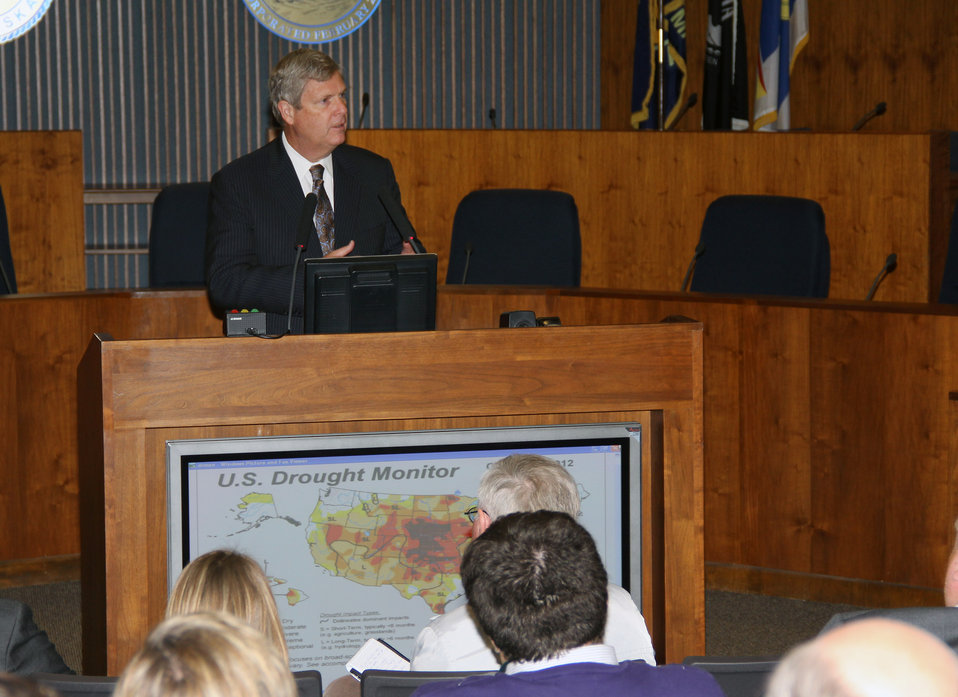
Agriculture Secretary Tom Vilsack speaks at the opening session of a Federal Drought Workshop in Omaha, NE on Tuesday, Oct. 9, 2012. This was the first of four regional workshops to outline resources available to assist with drought recovery effort. Secretary Vilsack indicated that President Obama had directed federal agencies to take every possible step to help farmers and ranchers, businesses, and rural communities recover as a result of one of the country's worst droughts in decades. The U.S. Department of Agriculture (USDA) is partnering with local, state and federal partners to hold the workshops, working closely with the Department of Commerce, the Small Business Administration and the Federal Emergency Management Agency to facilitate these meetings.